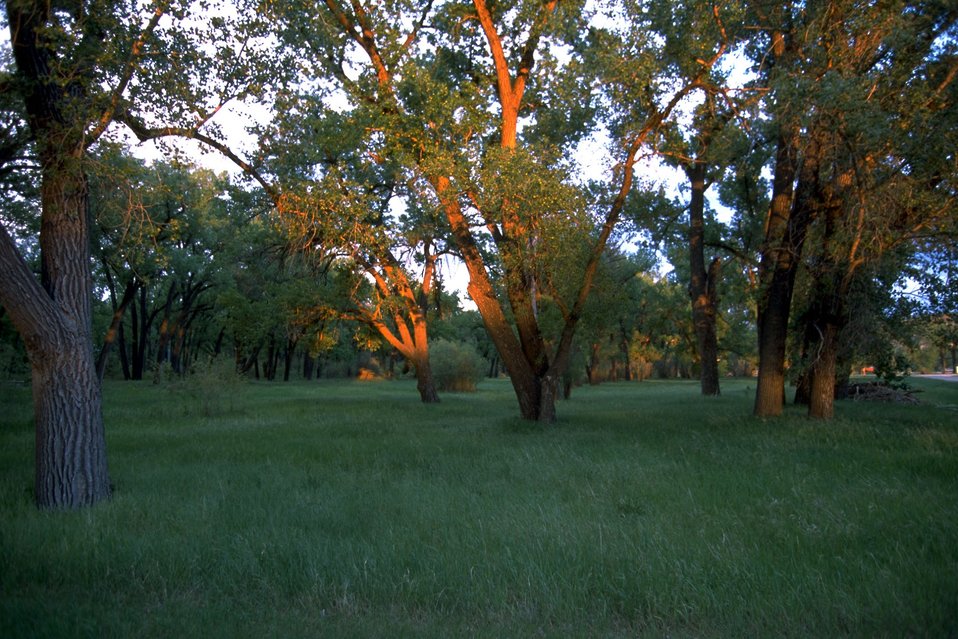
Scenic view of the sun shining on tree trunks amidst the green grass